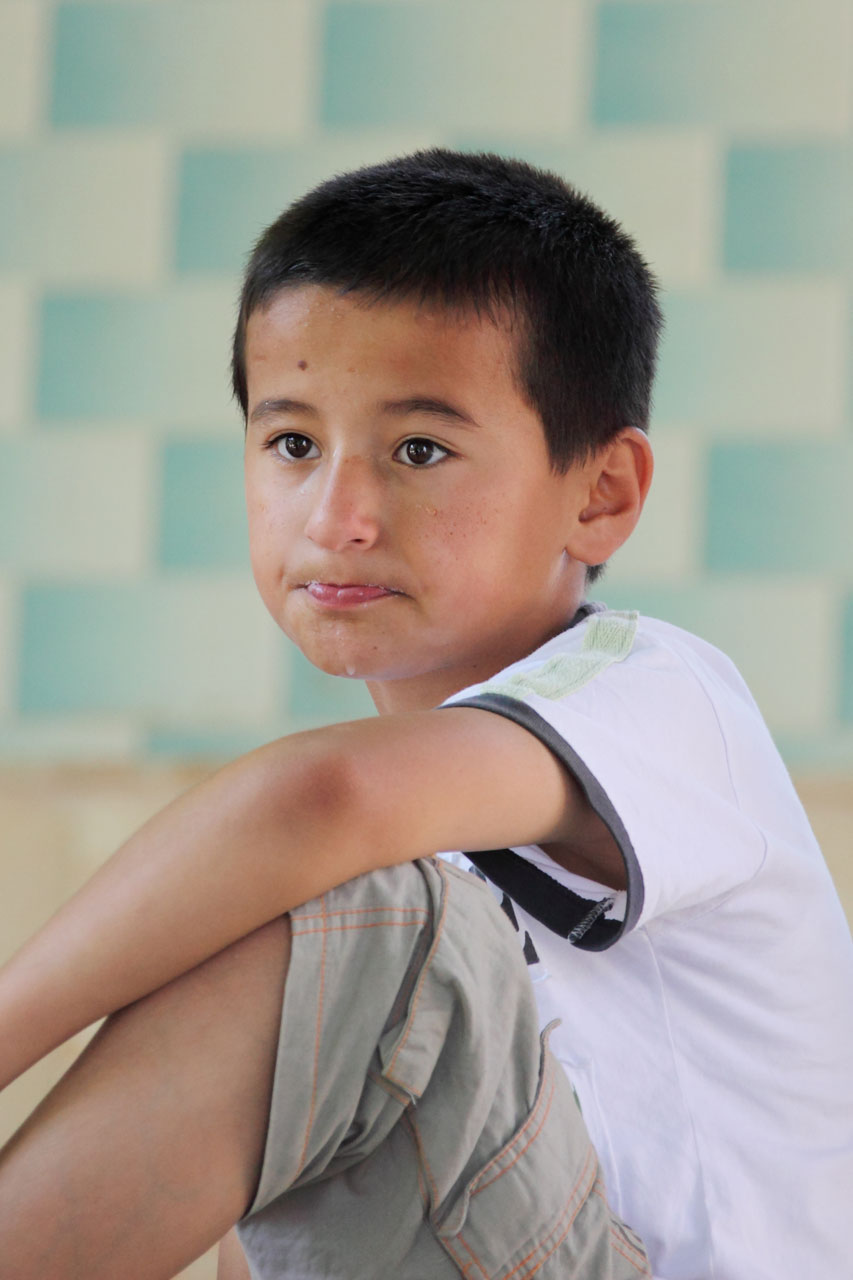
Young turkish boy sitting.